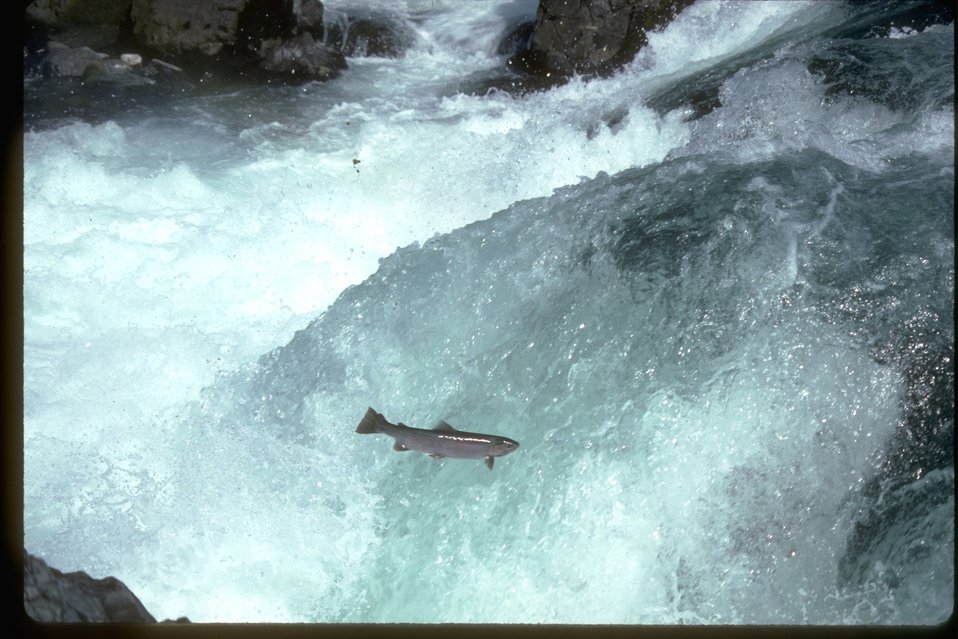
Salmon leaping falls in southwest Oregon.